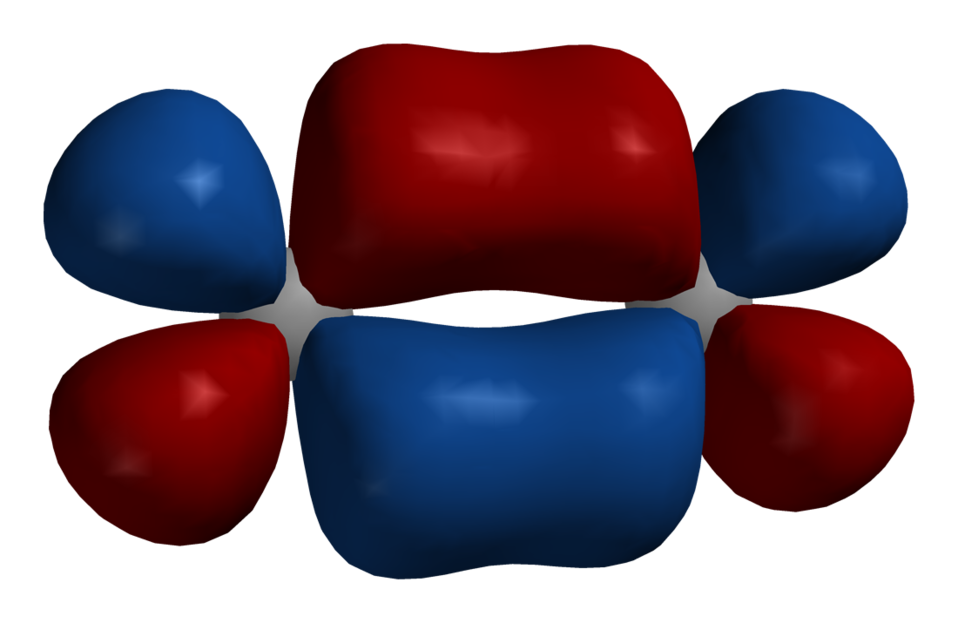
Space-filling model of a pi bond (bonding molecular orbital with π symmetry) generated by the overlap of two d orbitals